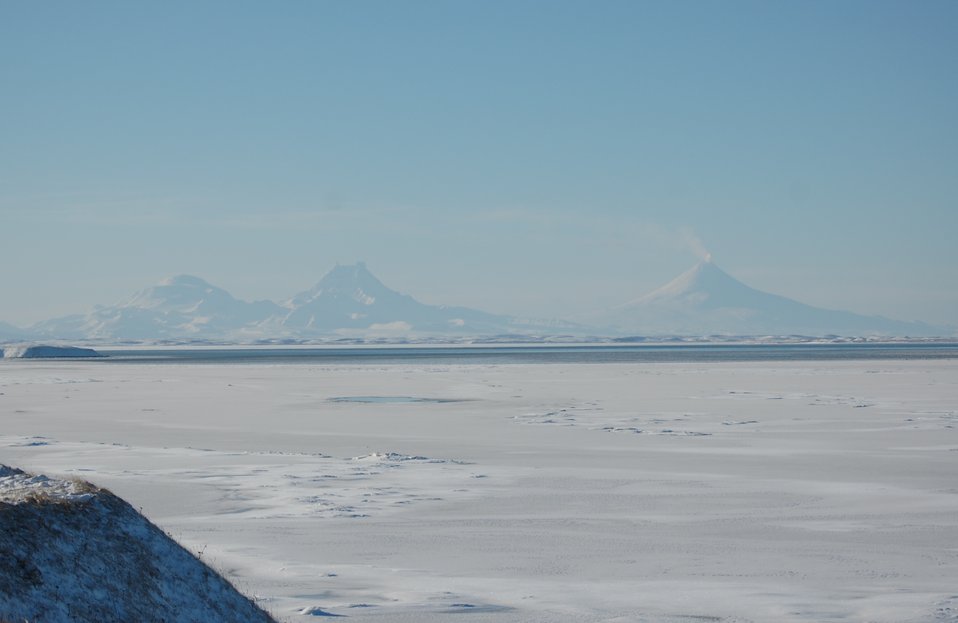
Unimak Volcanoes seen from Grant Pt

View from Grant Point towards Unimak Island, Izembek National Wildlife Refuge